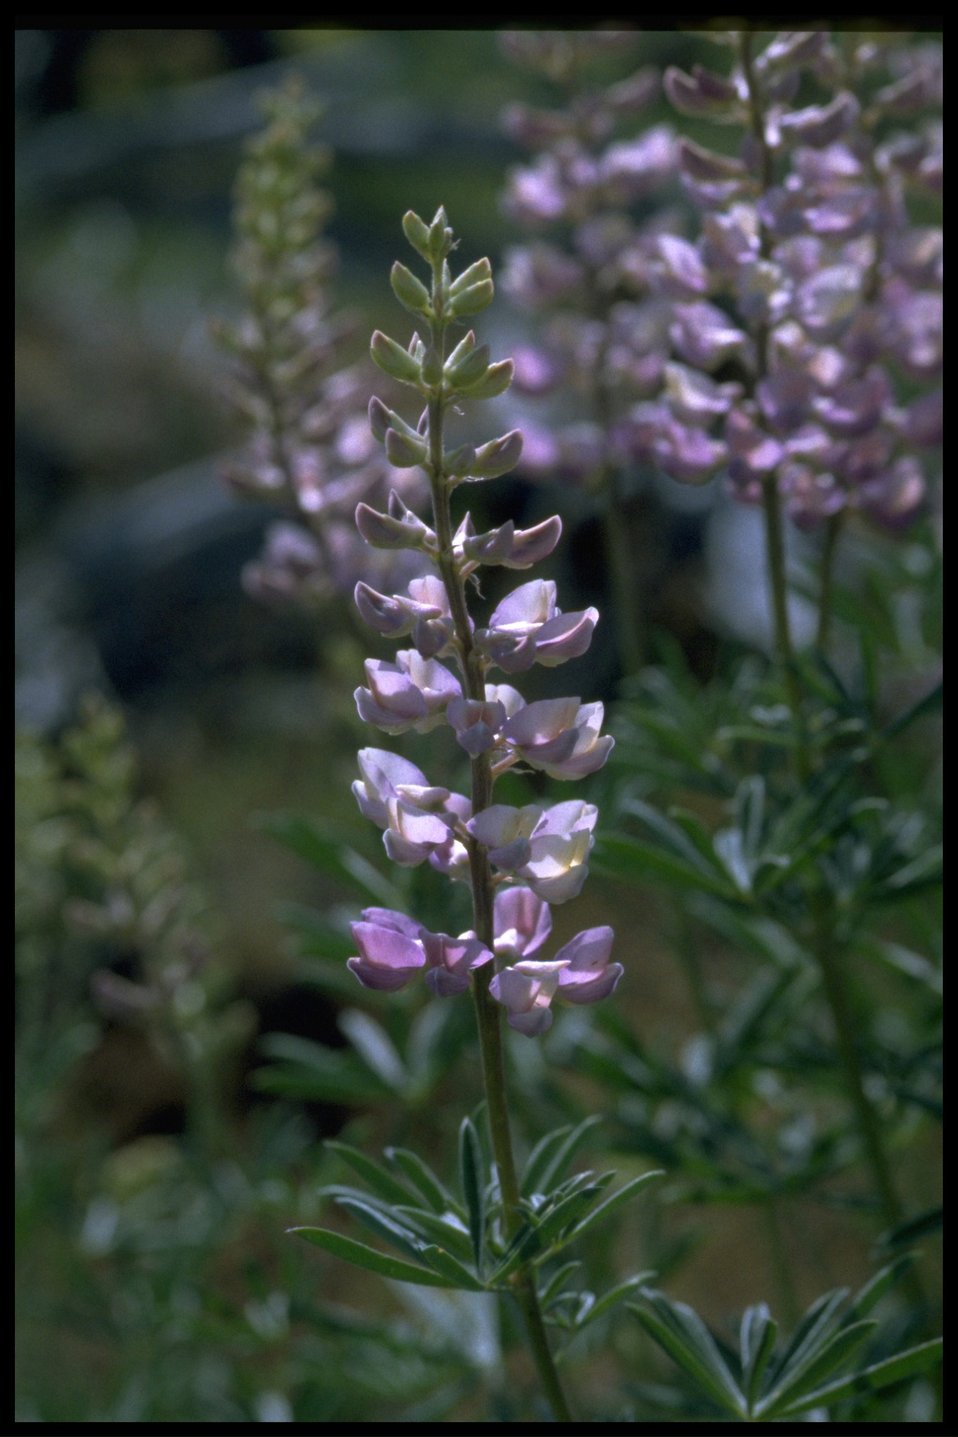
Closeup shot of Bigleaf Lupine flower stalk.